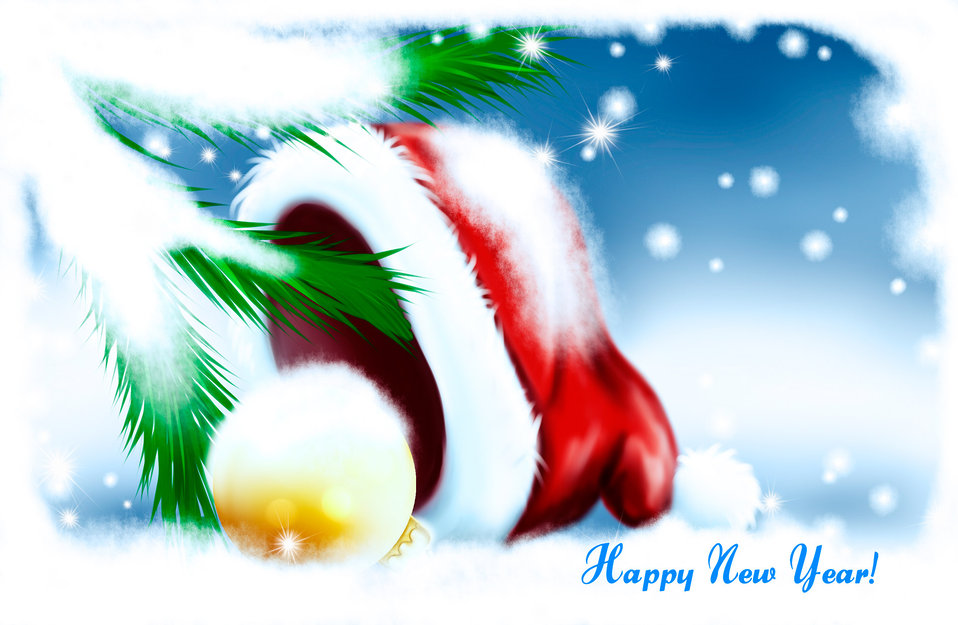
Christmas background

Painted greeting cards for christmas and the new year..